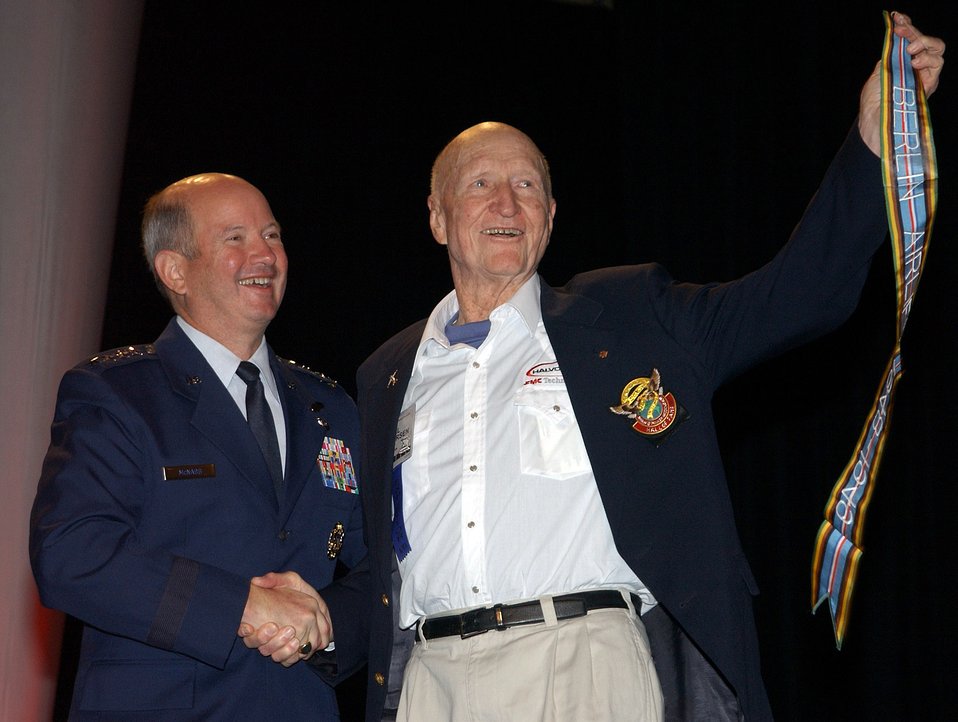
Air Force authorizes Berlin Airlift streamers

NASHVILLE, Tenn. -- Retired Col. Gail Halvorsen holds the newly authorized Berlin Airlift streamer after Gen. Duncan J. McNabb presented it to him Oct. 29 here at the Airlift Tanker Association convention. Units that participated in the 1948-1949 humanitarian airlift can include the streamer on their units' guidons. Colonel Halvorsen is known as the